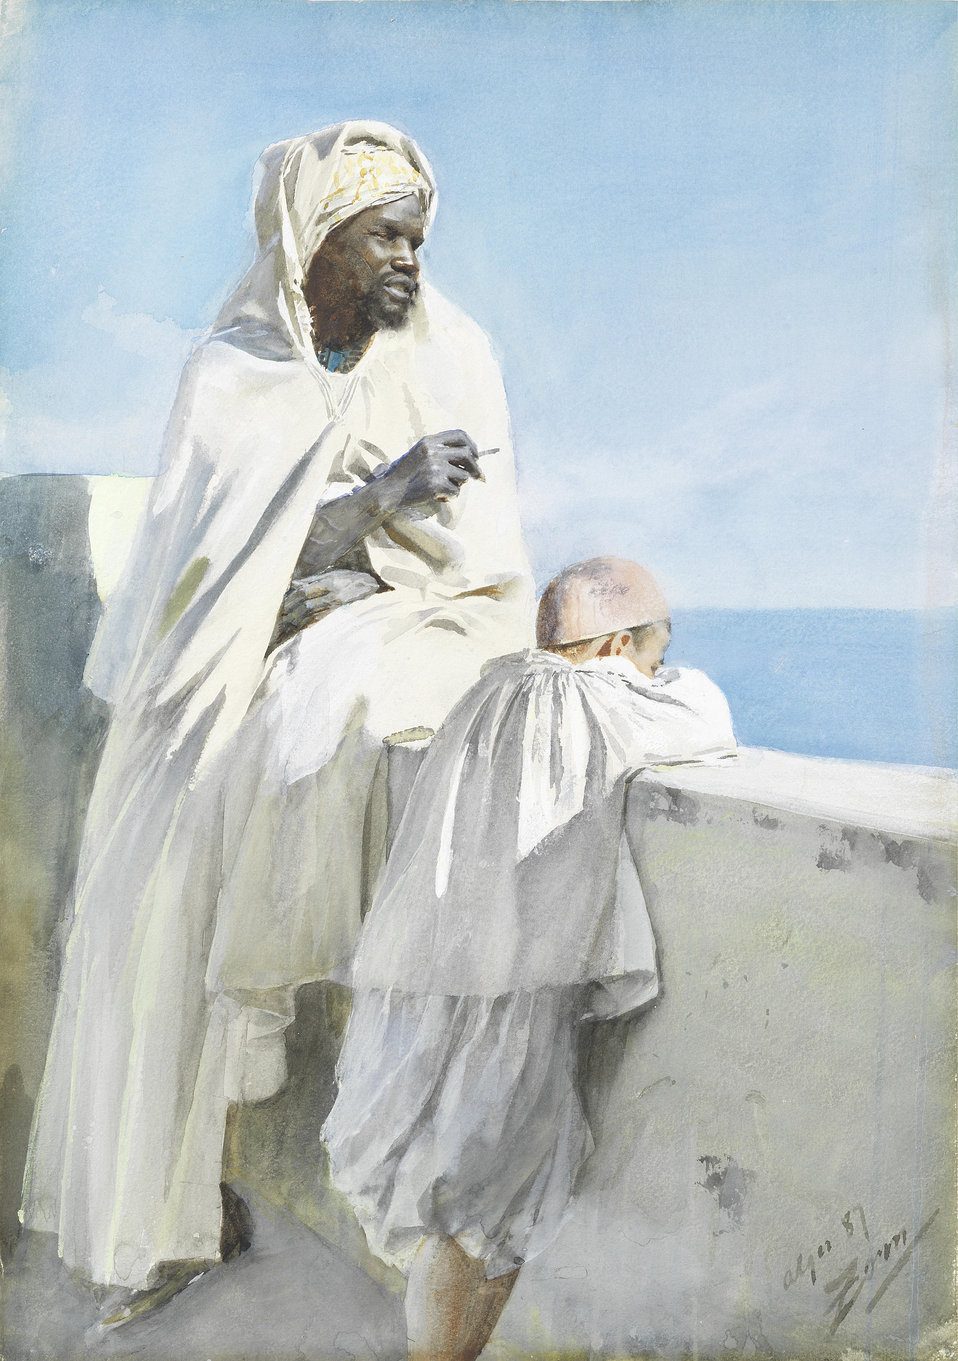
Man and boy in Algiers. Signed, inscribed and dated 'alger 87/Zorn' (lower right). Watercolour and bodycolour on paper laid down on board. 48.7 x 34.7 cm